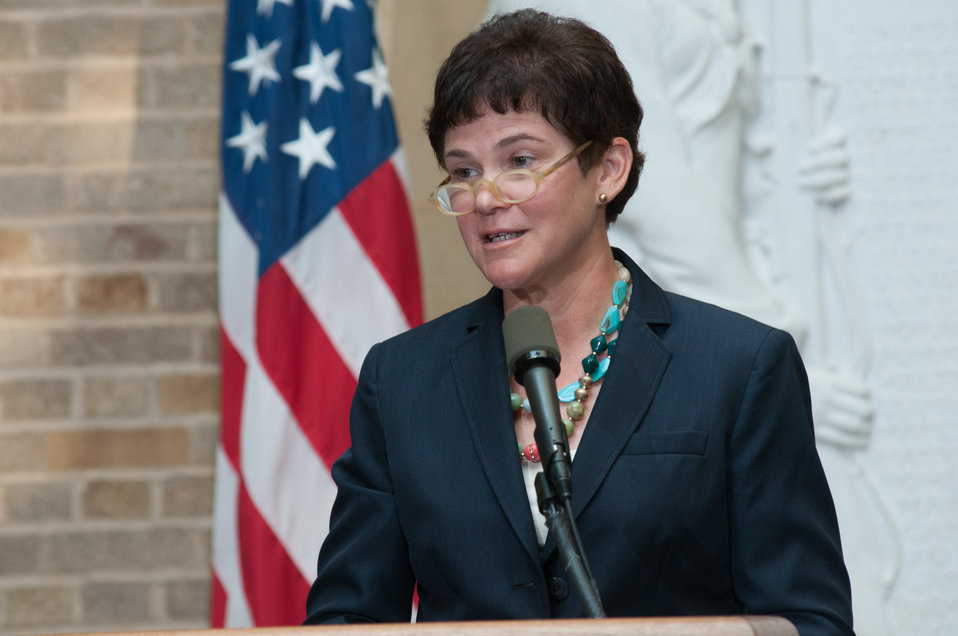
U.S. Department of Agriculture (USDA) Deputy Secretary Krysta Harden talks about the partnership agreement and five new grants for private, state and federal organizations that will work together to stimulate the development of additional wood energy projects in their states, during the Memorandum of Understanding (MOU) announcement and signing at the USDA Headquarters, in Washington, D.C., on Wednesday, September 11, 2013. Collectively, $2.9 million will be spent o this effort -- $1.1 million on federal funds and $1.8 million in non-federal funds.
The partnership agreement focuses on promoting wood energy nationwide as a means to address fire risks, bolster rural economic development, improve air quality, and help meet the Obama Administration’s renewable energy and energy efficiency goals. These organizations support the use of wood energy across the scale of users – from residential users, to commercial and intuitional facilities, to industrial production of heat and or electricity to drive businesses and feed the electrical grid.
Signing the MOU are Biomass Thermal Energy Council, Executive Director Joseph Seymour; Alliance for Green Heat, President John Ackerly, USDA Deputy Agriculture Secretary Krysta Harden; Pellet Fuels Institute Executive, Director Jennifer Hedrick; Biomass Power Association, President and CEO Bob Cleaves. For more information on the cooperative agreement program, visit na.fs.fed.us.werc/wood-energy/ USDA Photo by Lance Cheung.